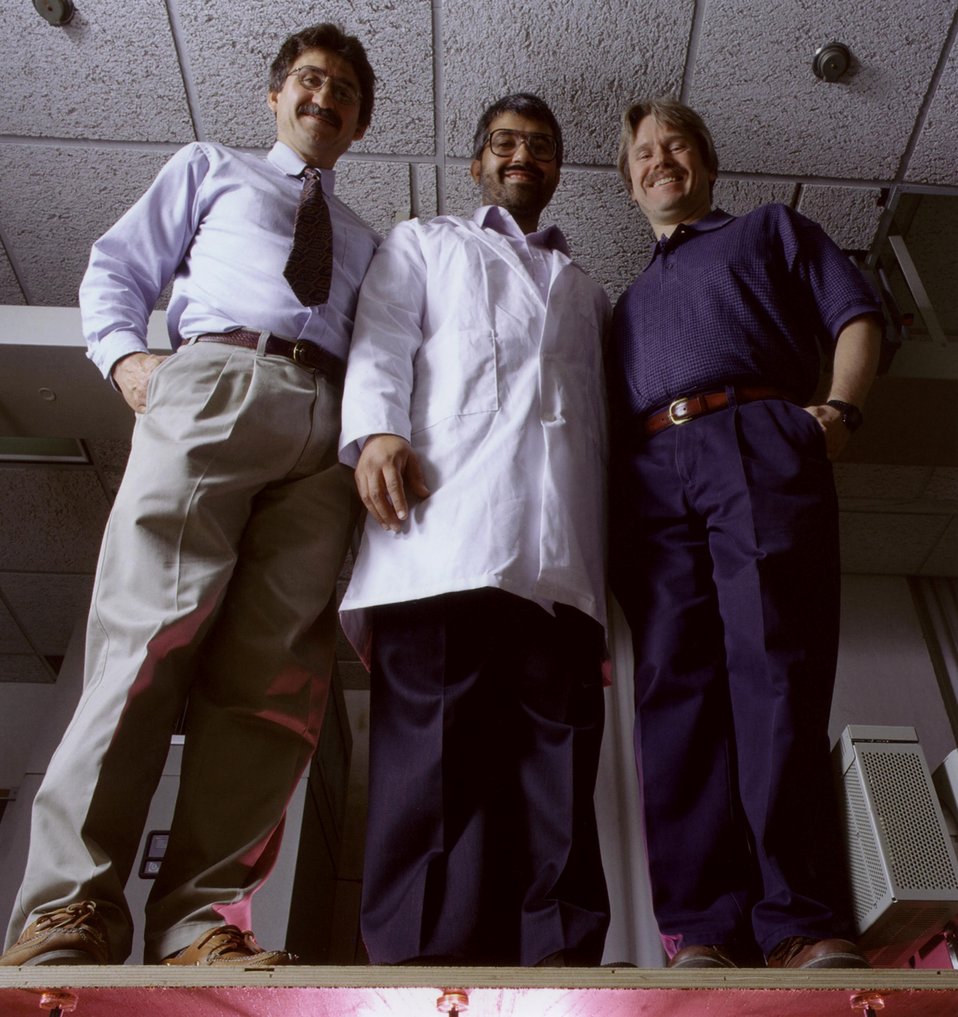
THREE AMES SCIENTISTS STAND ON PLATFORM SUPPORTED BY THE NEW GLUE THEY DEVELOPED.
THE GLUE PRODUCES STRONG JOINTS WITHOUT THE EXPENSIVE, HIGH TEMPERATURE CURING PROCESS USED FOR OTHER TYPES OF CERAMIC GLUES. SCIENTISTS HOPE THAT THIS SIMPLE, EFFECTIVE JOINING METHOD WILL PROMPT INDUSTRY TO MAKE GREATER USE OF SPECIAL CERAMIC COMPOSITES IN HIGH TEMPERATURE SETTINGS. THESE COMPOSITES HAVE PROPERTIES THAT, IN SOME APPLICATIONS, MAKE THEM SUPERIOR TO STEEL AND SUPER ALLOYS BECAUSE THEY CAN WITHSTAND HIGHER TEMPERATURES, DO NOT MELT AND RE LESS SUSCEPTIBLE TO CORROSION, MAKING THEM IDEAL FOR SUCH USES AS INDUSTRIAL FURNACE FANS AND TURBINES IN HOT, CORROSIVE ENVIRONMENTS.